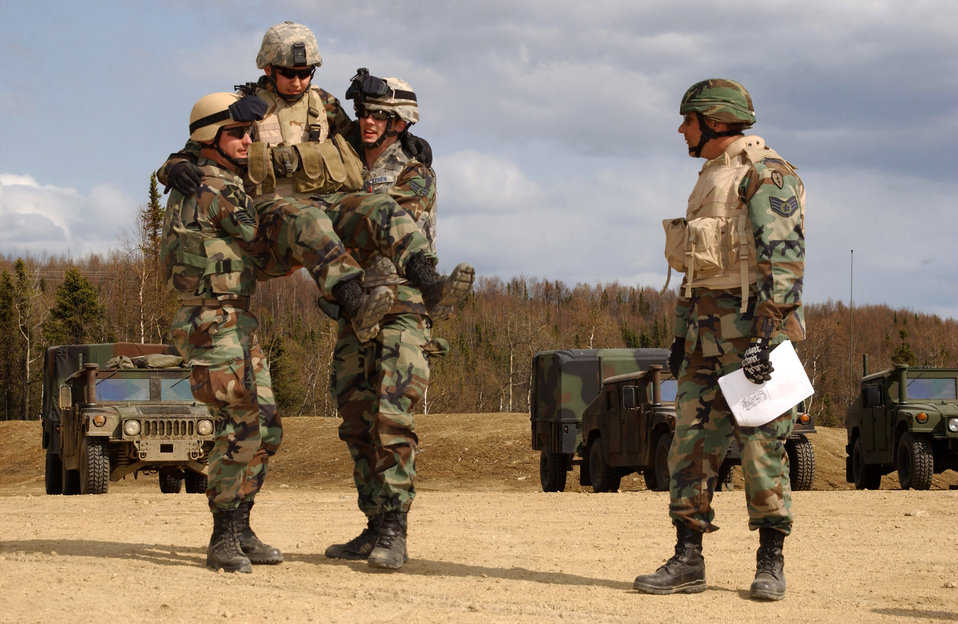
Practice makes perfect during Ursa Minor

Staff Sgt. Chris Skaggs (right) observes as Tech. Sgt. Thomas Moody (left) and Senior Airman Benjamin Gartner (center) demonstrate the four-handed seat-carry to transport Airman 1st Class Steven Vonack May 15 during self-aid buddy care training. The four 3rd Air Support Operations Squadron Airmen are participating in Operation Ursa Minor, a three-day field training exercise at Eielson Air Force Base, Alaska, designed to provide hands-on combat training and experience to Airmen before they deploy to a combat area.